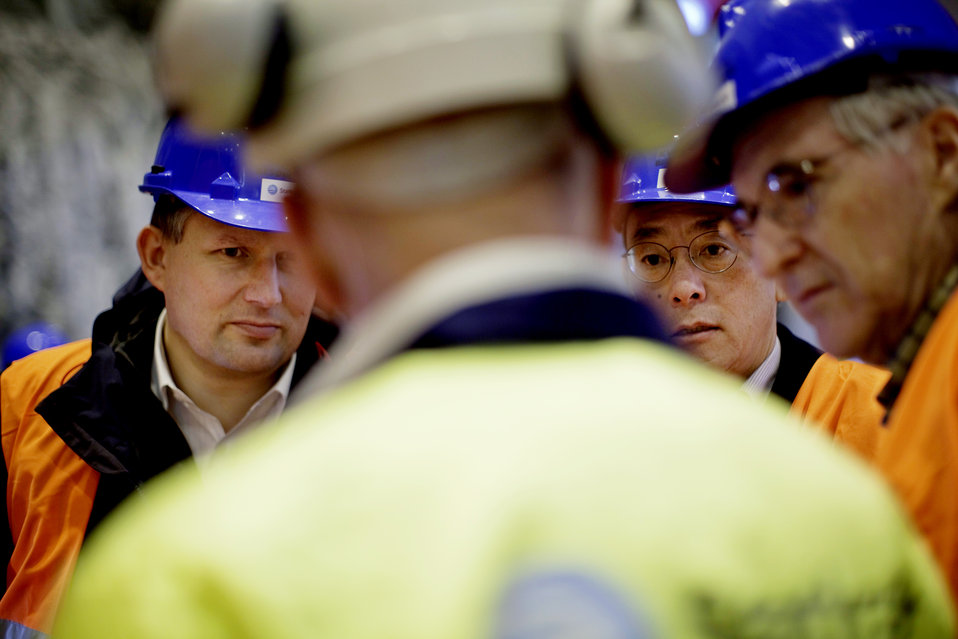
orientation from Statkraft

KVILLDAL 20091212.
Olje- og energiminister, Terje Riis-Johansen og USAs energiminister Stephen Chu fikk lørdag omvisning på Ulla-Førre anlegget, Norges største kraftstasjon.
Foto: Stian Lysberg Solum / Scanpix